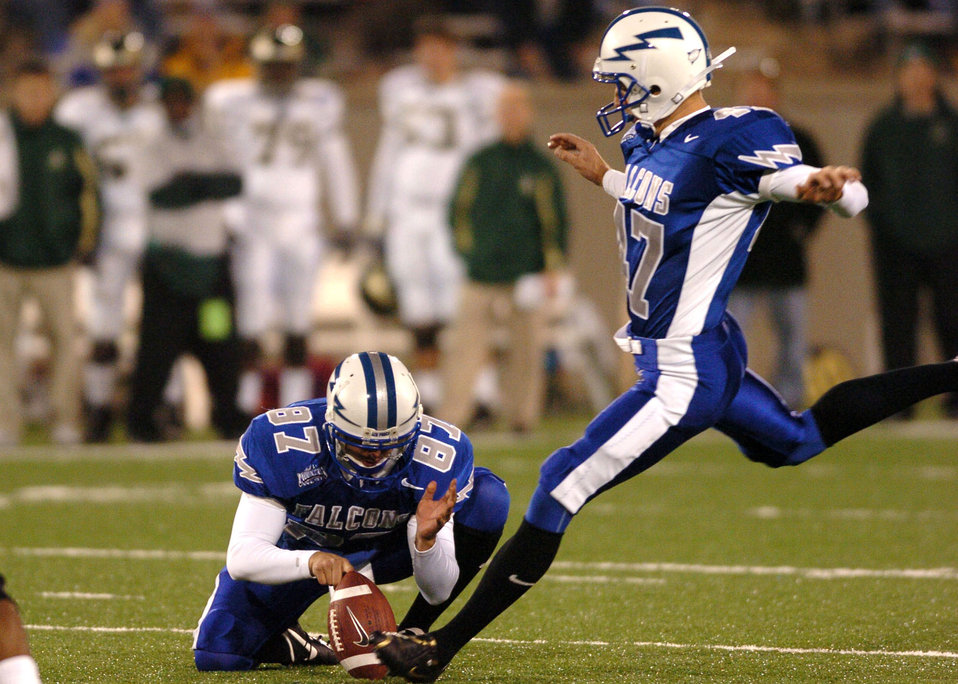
Winning Margin

An early-game field goal by Air Force kicker Zach Sasser turns out to be the winning margin over Colorado State Thursday night as the Falcons come from a 21-3 halftime deficit with 21 unanswered second-half points to defeat the Rams, 24-21.